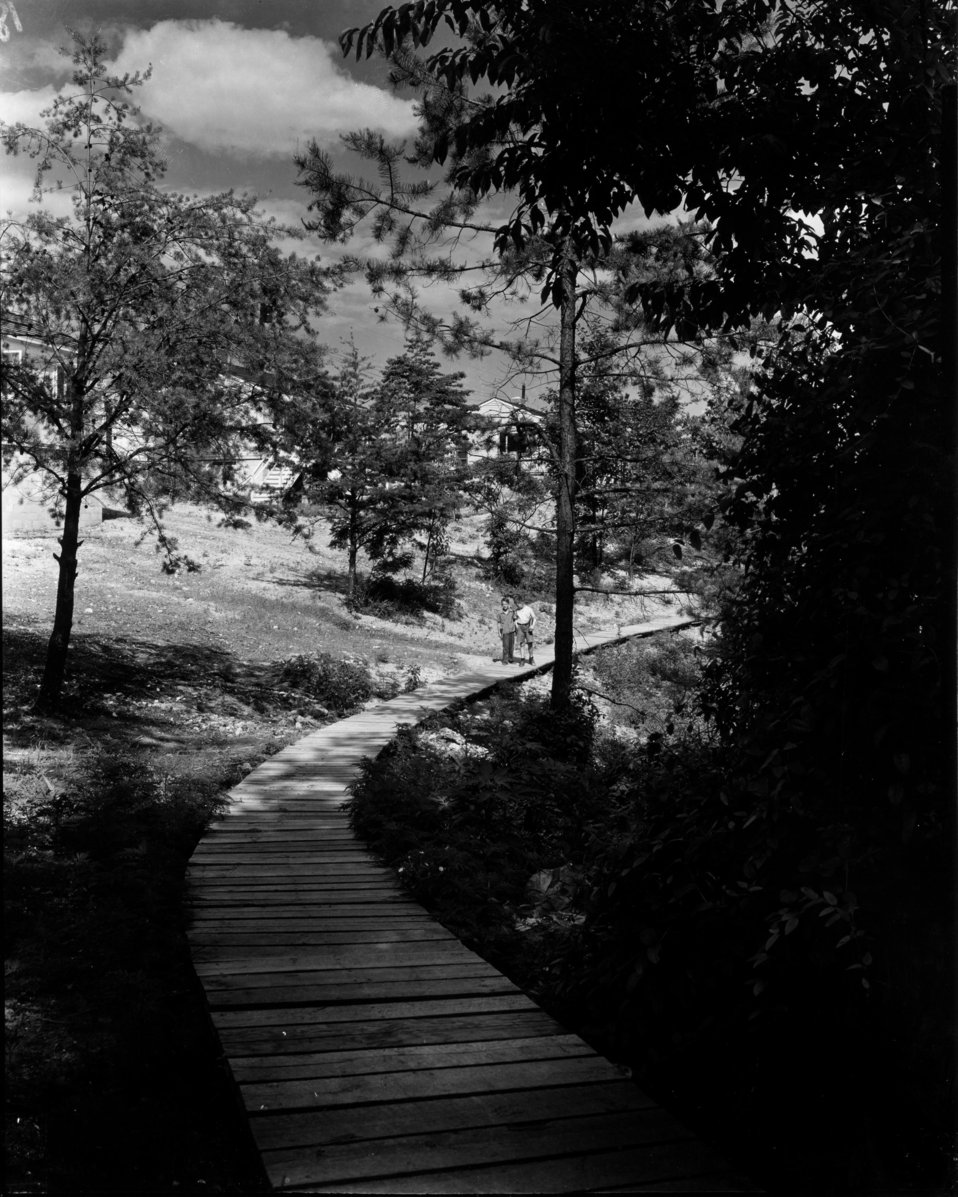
Daily Life at Oak Ridge